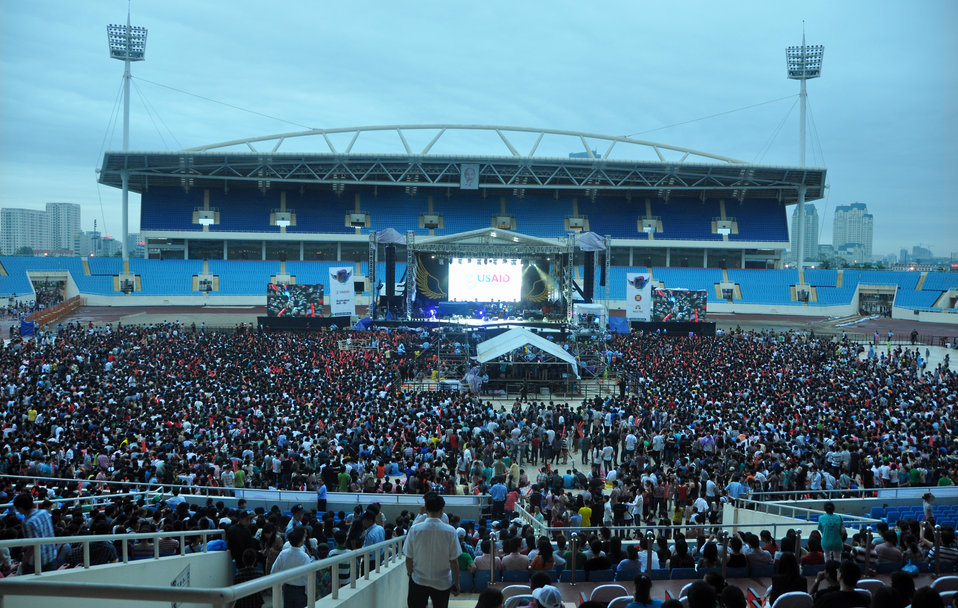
Huge crowd turns out for MTV EXIT concert against human trafficking and exploitation